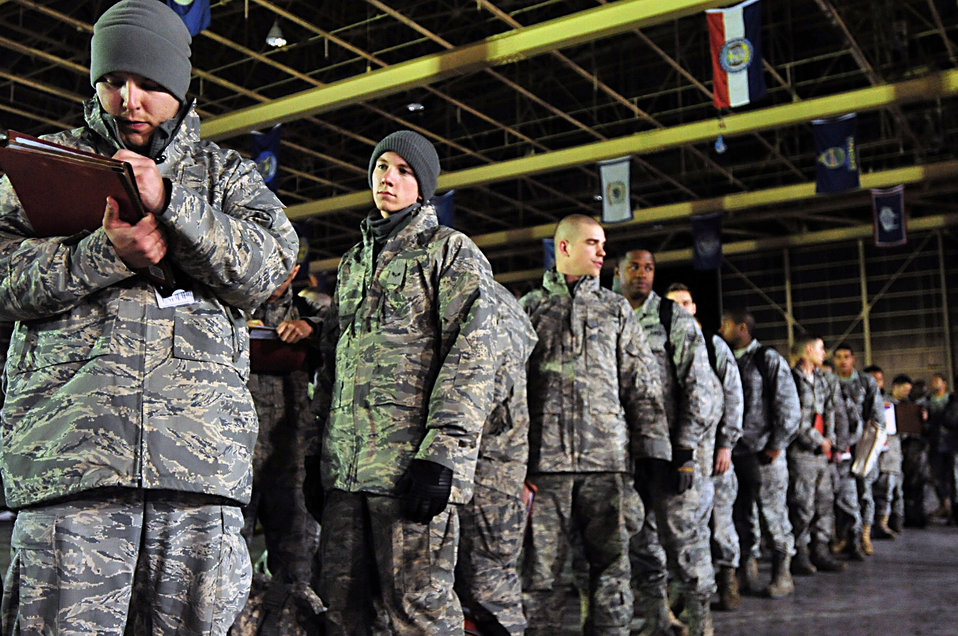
Generators installed at Misawa Inn

Members of the 18th Civil Engineer Squadron wait to receive briefings after arriving at Misawa Air Base Mar. 13, 2011 in support of Operation Tomodachi. Several search and rescue teams are also scheduled to arrive and assist in civil relief recovery operations.